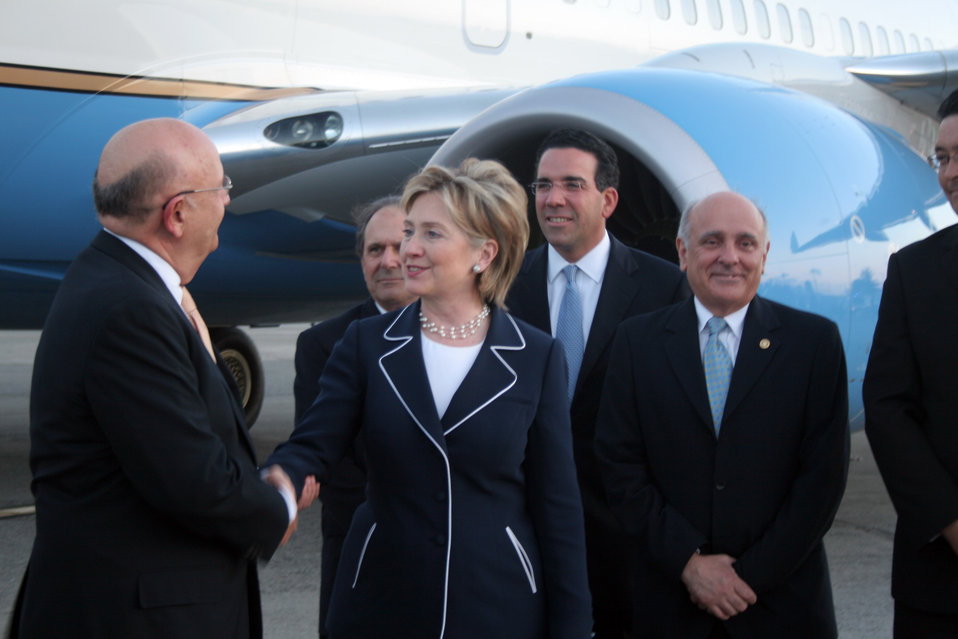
Secretary Clinton Arrives in Dominican Republic

U.S. Secretary of State, Hillary Rodham Clinton with Dominican Republic Foreign minister, Carlos Morales Troncoso upon arrival at Santo Domingo, Dominican Republic April 16, 2009.